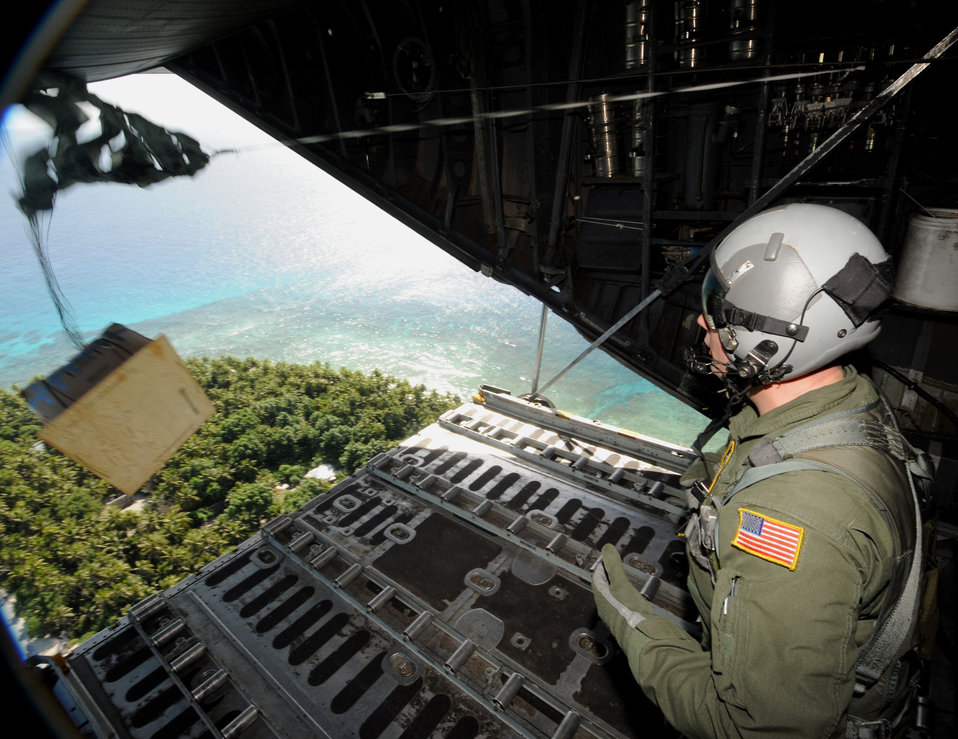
Operation Christmas Drop

Tech. Sgt. Heath Bahyi observes boxed cargo being airdropped from a C-130 Hercules during Operation Christmas Drop Dec. 19 over the remote Island of Yap. Airmen today continue the tradition of delivering supplies to remote islands of the Commonwealth of the Northern Marianas Islands, Yap, Palau, Chuuk and Pohnpei. In all, more than 180 boxes were built for the humanitarian mission, making 2008 one of the largest drops in Operation Christmas Drop's 57-year history. Sergeant Bahyi is a loadmaster from the 36th Airlift Squadron from Yokota Air Base, Japan.